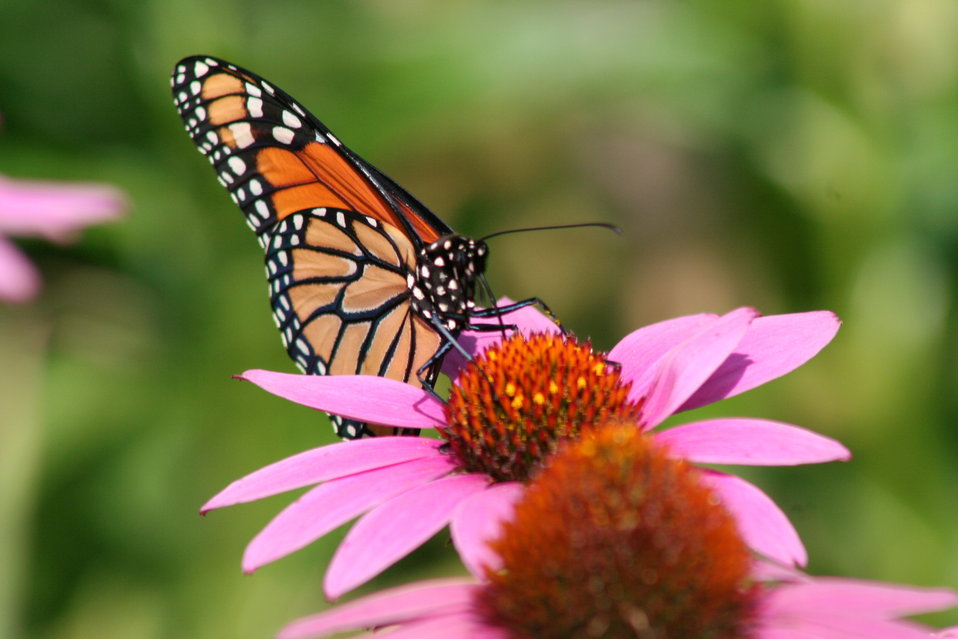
Monarch butterfly on purple coneflower.